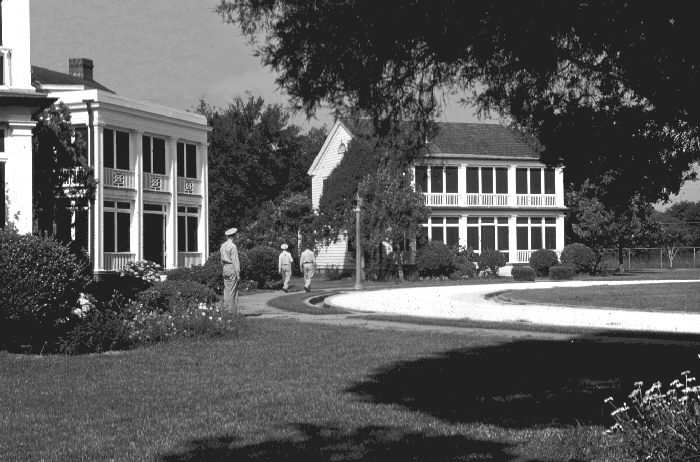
Public Health Service Hospital, New Orleans, Louisiana.